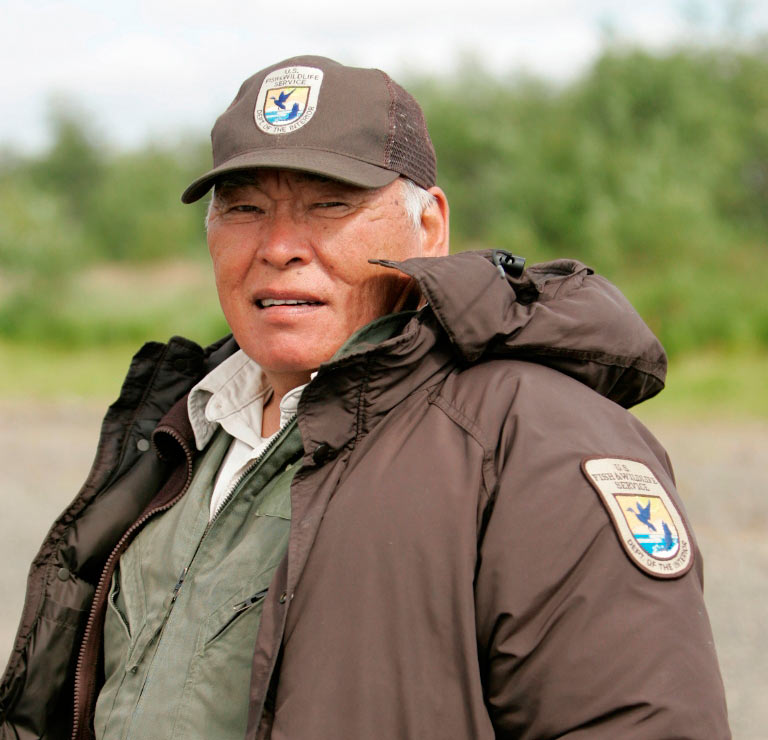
Pete Abraham-Alaska Region

Veteran Pete Abraham is Togiak National Wildlife Refuge’s Information Technician.